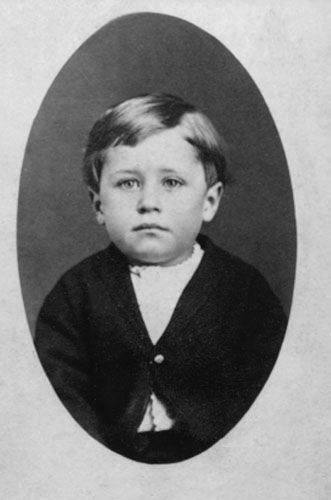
Orville Wright

Early Years -- Orville Wright